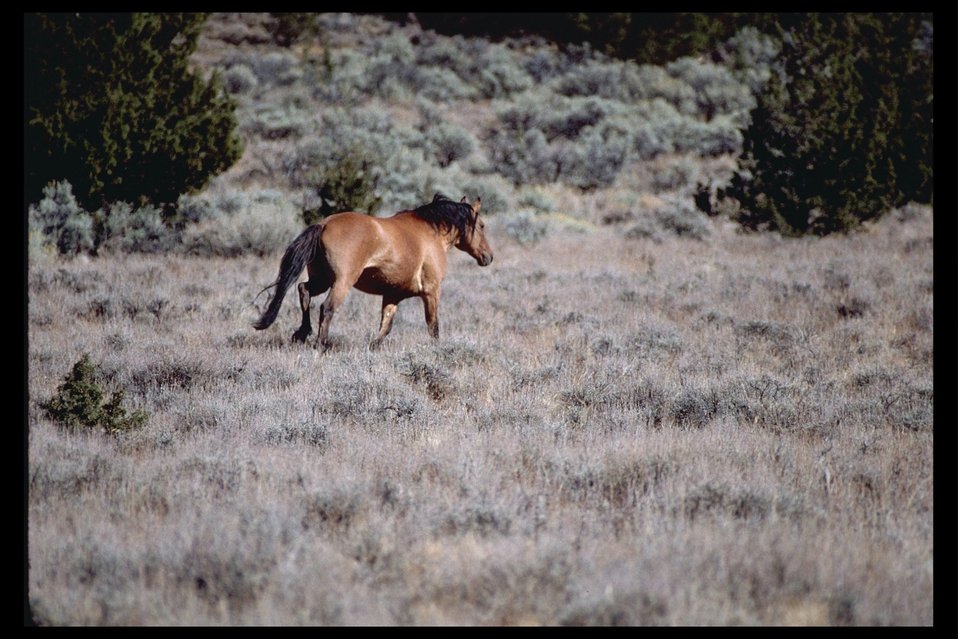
Kiger mustang on the range of Kiger HMA.